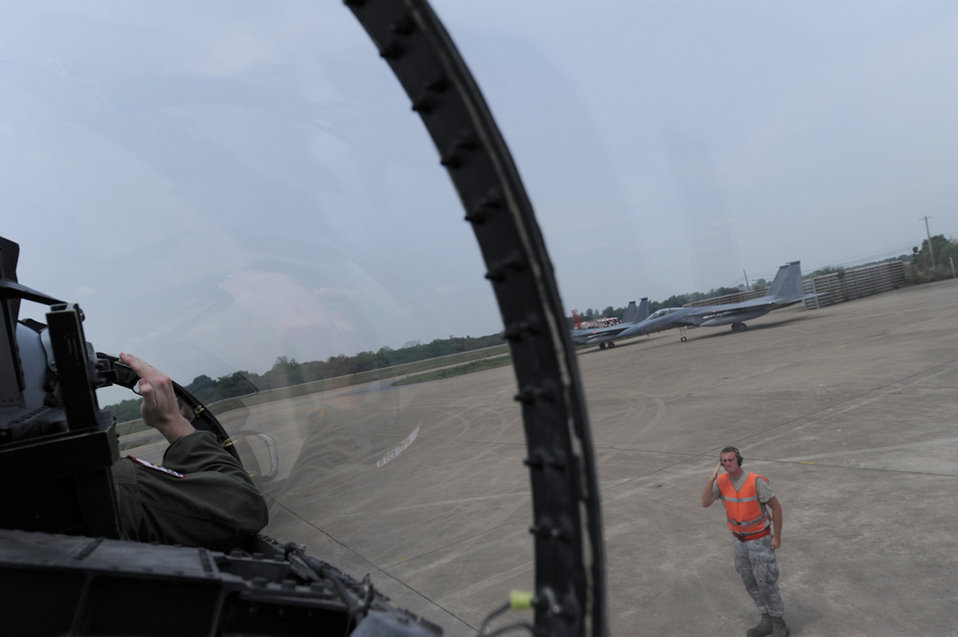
Cope Tiger 2011

A crew chief assigned to the 44th Expeditionary Maintenance Squadron at Kadena Air Base, Japan, salutes Capt. Richard Ward of the 44th Expeditionary Fighter Squadron before he departs Korat Royal Thai Air Force Base, Thailand, on March 23, 2011, to participate in an exercise scenario during Cope Tiger 2011, which runs from March 14 through 25. Participants of Cope Tiger include the U.S. Air Force, the U.S. Marine Corps, the Royal Thai Air Force, Royal Thai Army and the Republic of Singapore Air Force.